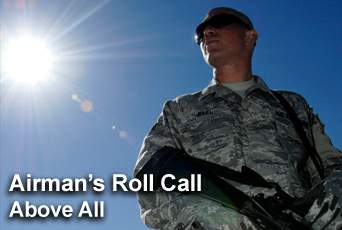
Airman's Roll Call highlights new slogan

This week's Airman's Roll Call focuses on the Air Force's new campaign slogan,